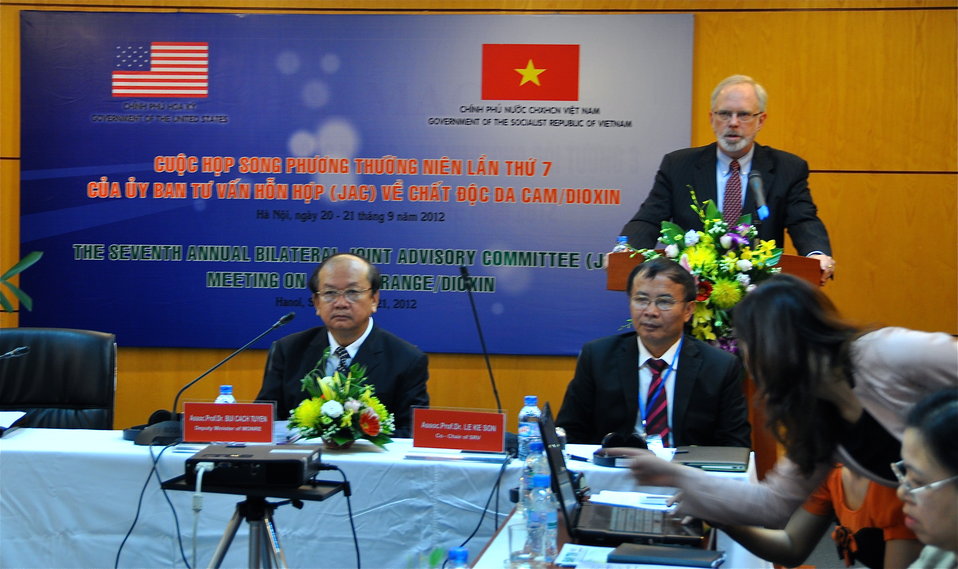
U.S. Ambassador David B. Shear at the Seventh U.S.-Vietnam Advisory Committee Meeting (JAC)

Hanoi, September 20, 2012